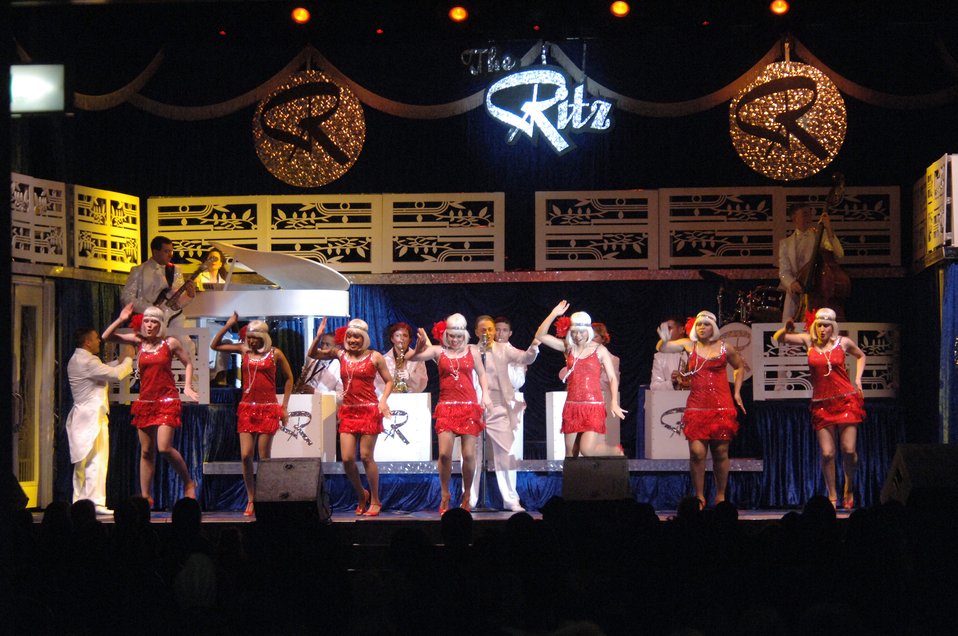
Tops in Blue

YOKOTA AIR BASE, Japan (AFPN) -- Members of the Air Force Tops in Blue entertainment troupe perform for several hundred people here. The group -- called the Air Force's